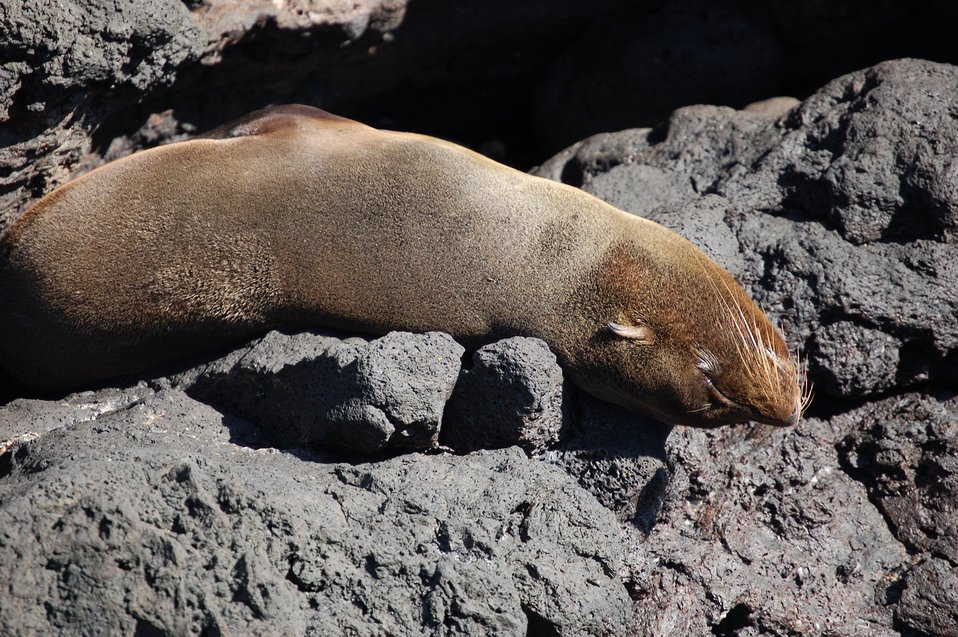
Fur seal.